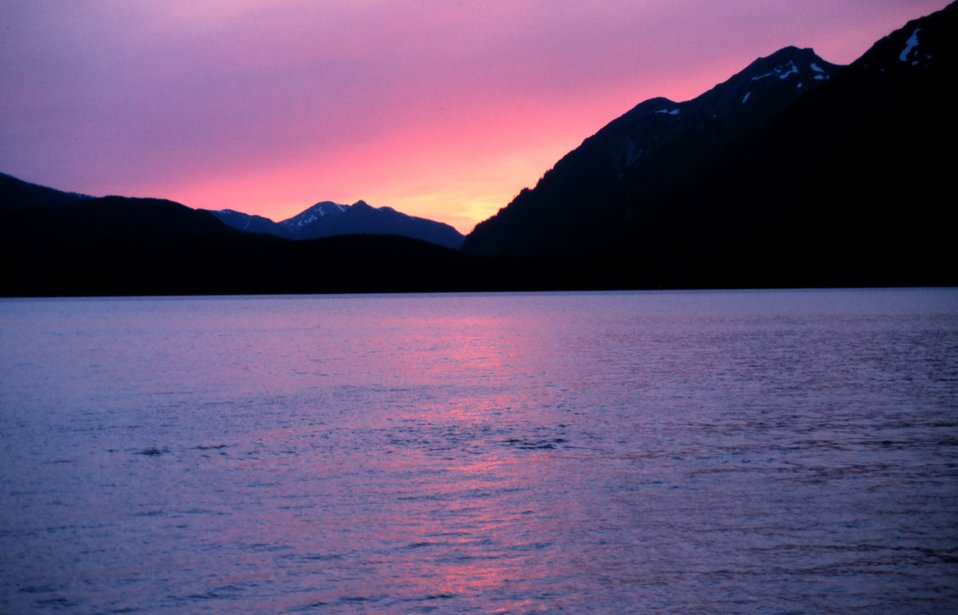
A Southeast Alaska sunset